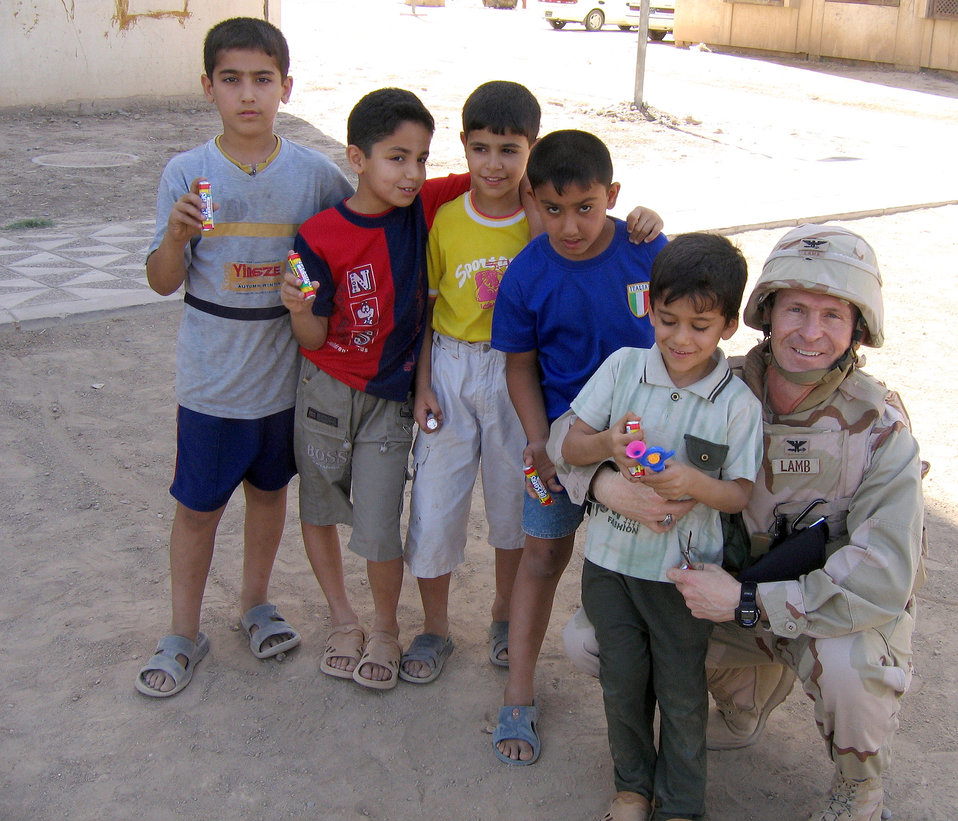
Colonel receives Bronze Star during Alabama-Auburn game

Colonel Duane Lamb, deployed to Balad Air Base, Iraq, from Maxwell Air Force Base, Ala., poses for a photo with children in Baghdad during a mission May 31, 2006. Colonel Lamb, who received his commission from the University of Alabama nearly 30 years ago, was presented the Bronze Star for his combat leadership during a ceremony Nov. 18, at his school's rival football game against Auburn University.